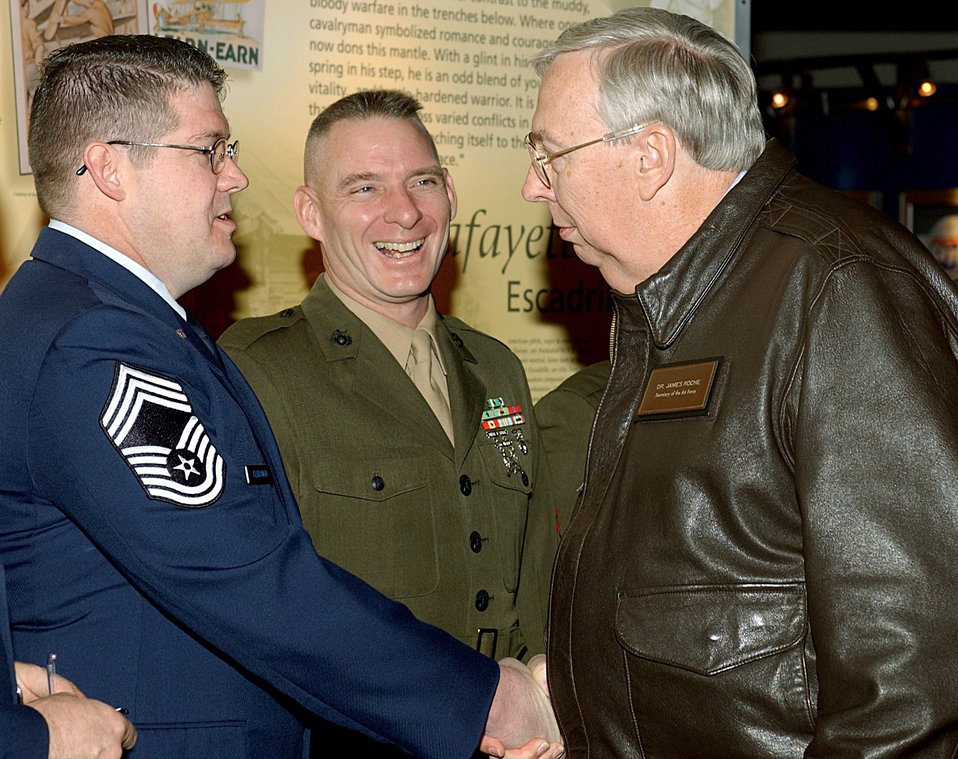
Enlisted graduate AFIT

DAYTON, Ohio -- Secretary of the Air Force Dr. James G. Roche speaks with Chief Master Sgt. Donald Clabaugh (left) and Marine Corps Gunnery Sgt. Brian Hamilton before the Air Force Institute of Technology graduation ceremony March 23 at the Air Force Museum here. The two noncommissioned officers were among the first enlisted students to obtain AFIT degrees. Eight Air Force and six Marine Corps senior NCOs graduated as part of the Class of 2004.